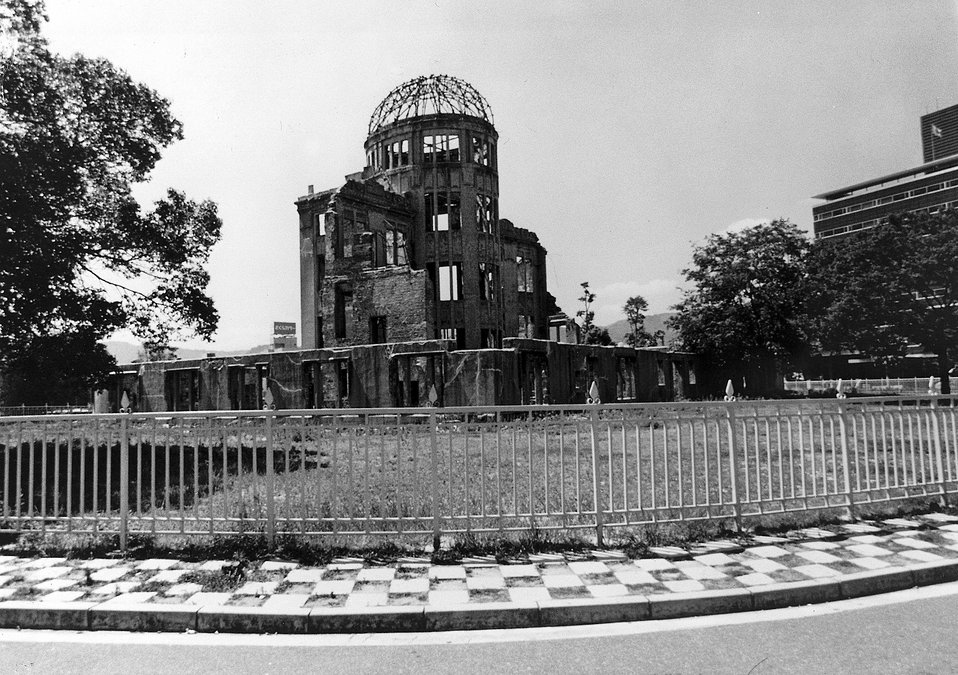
Hiroshima, Japan...The Peace Dome which is preserved as a reminder of what the atomic bomb can do.